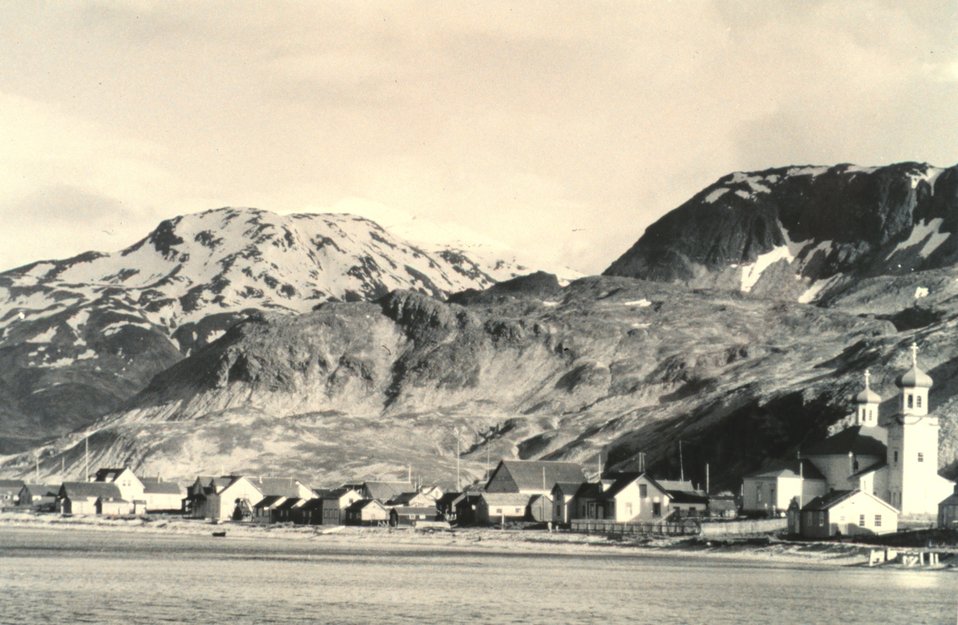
The villlage of Unalaska. The picturesque Russian Orthodox Church on the right. F&WS B-50336.